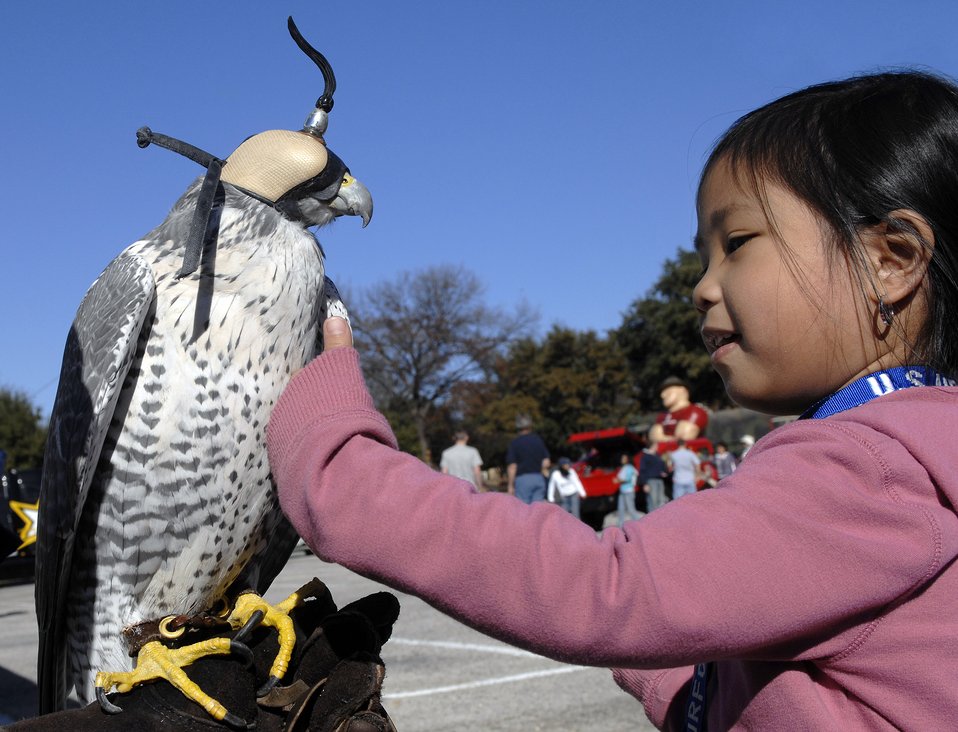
Falcons bowl return a bear

Janeiyah Cajudoy, 4, pets Destiny, an Air Force Academy Falcon mascot, on display in the Armed Forces Adventure area of Amon G. Carter Stadium during pre-game activities for the Bell Helicopter Armed Forces Bowl game between the U.S. Air Force Academy and University of California, Berkley Dec. 30, Ft. Worth, Texas.